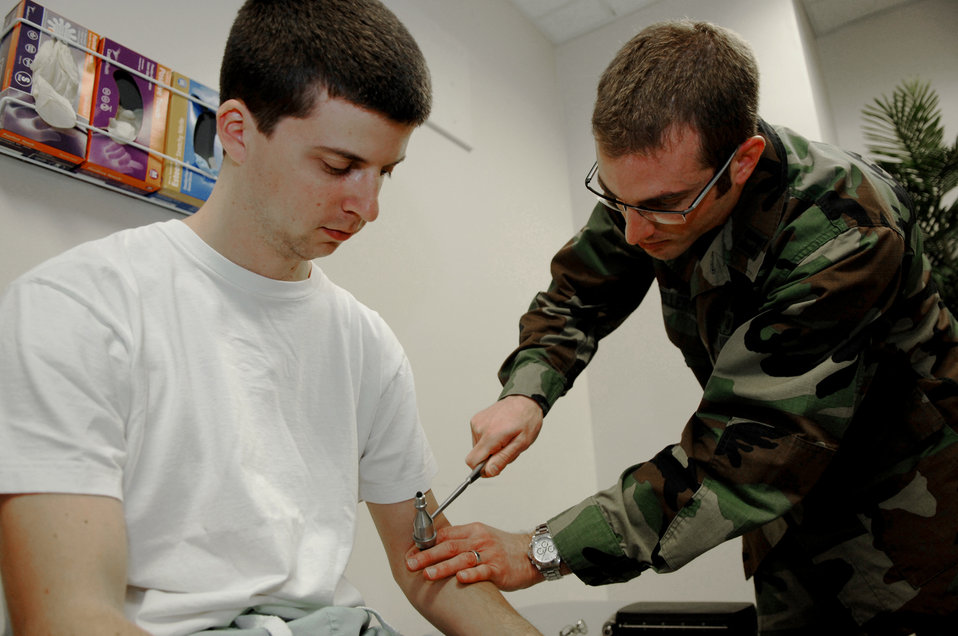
Wilford Hall neurology residents score highest in U.S.

Capt. (Dr.) Scott Heller (right) performs a neurological exam on Capt. (Dr.) Mathew Brock June 1, 2010, at Wilford Hall Medical Center, Lackland Air Force Base, Texas. Doctor Heller is a neurology resident with the 59th Medical Operations Squadron.